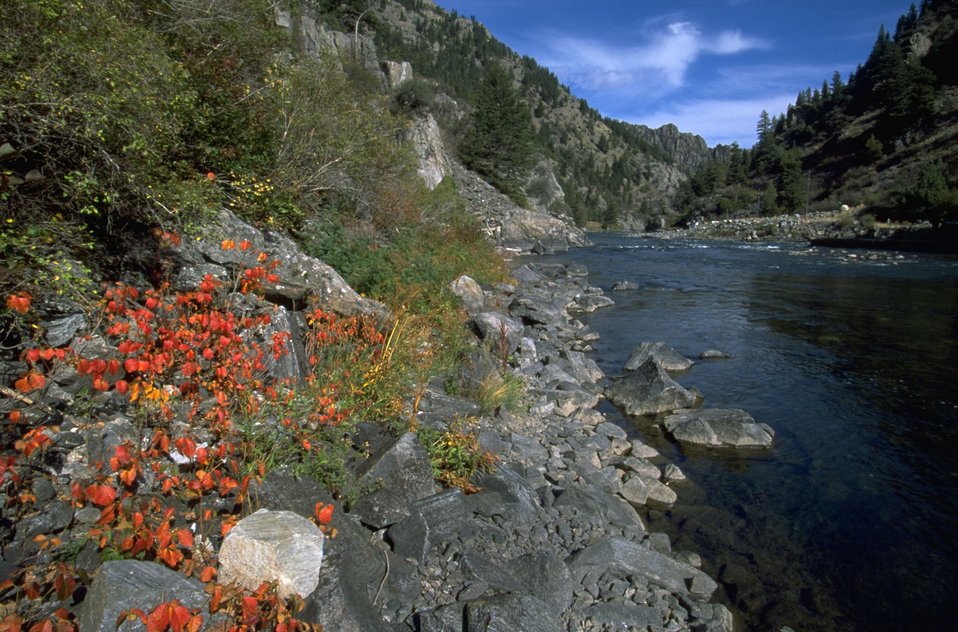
Poison Ivy next to Madison River